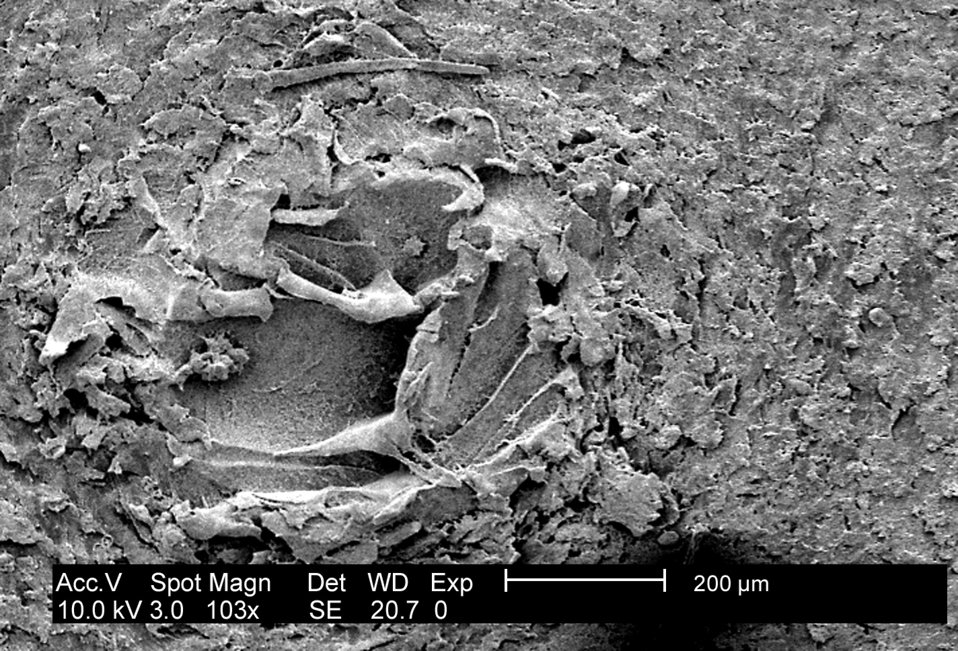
This low-mag SEM reveals surface irregularities in a biofilm coupon growing a 24hr biofilm of P. mirabilis (ATCC 29906).